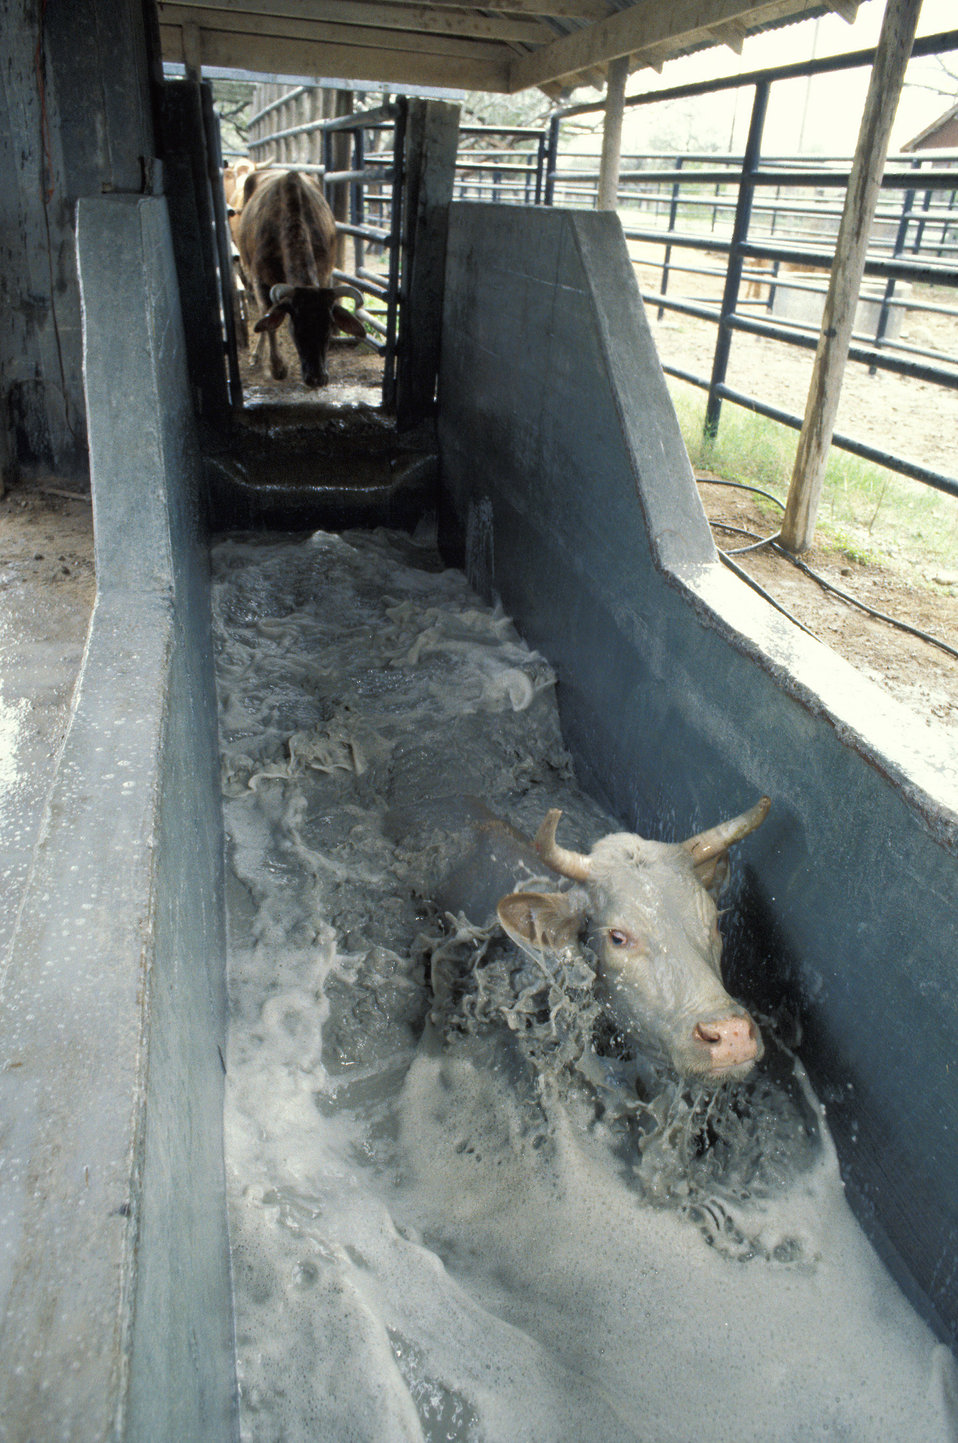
These cattle are going through a tick treatment bath at U.S. Department of Agriculture (USDA) Animal and Plant Health Inspection Service (APHIS) facility in McAllen, TX on Apr. 3, 2006. After a 36-year campaign, cattle fever ticks were finally declared eradicated from the U.S. in 1943. Today, the only remaining area where these ticks are found is a narrow strip of land along the Texas-Mexico border that has been quarantined ever since 1938.